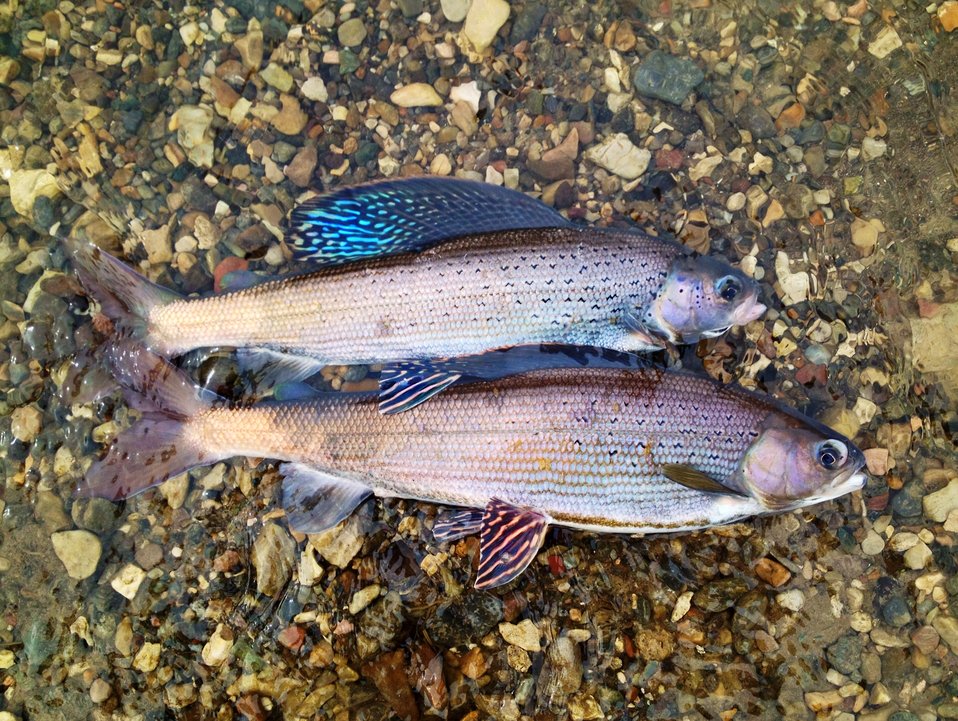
The next generation's parents?

A male (upper) and female (lower) Arctic Grayling collected from Red Rock Creek, Montana.